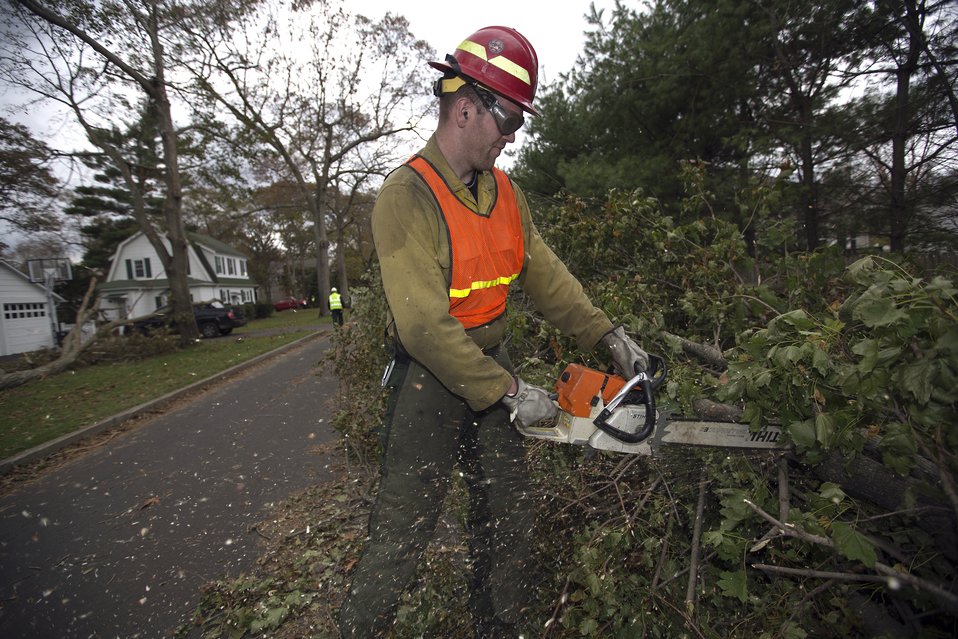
U.S. Forest Service Hot Shot team member John Kleciak uses a chainsaw to clear the streets of downed trees caused by Hurricane Sandy in St. James, NY on Nove. 3, 2012. The Hot Shots are from Region-8, Augusta Springs, VA.